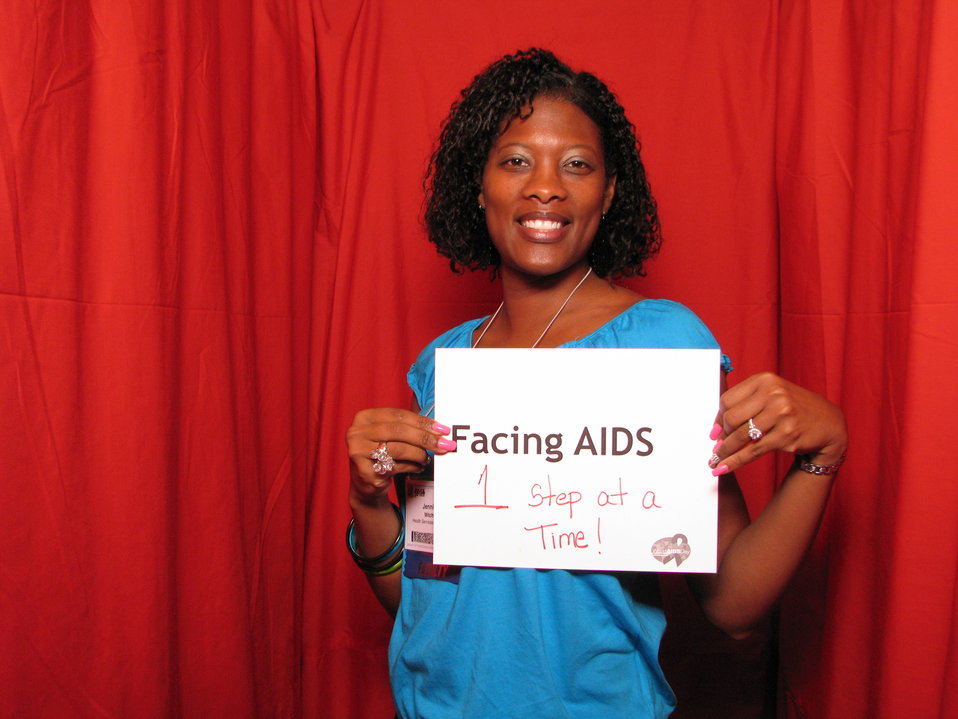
FACING AIDS 1 Step at a time!

From the AIDS.gov photo booth at the U.S. Conference on AIDS, September 2010 (Orlando, FL).